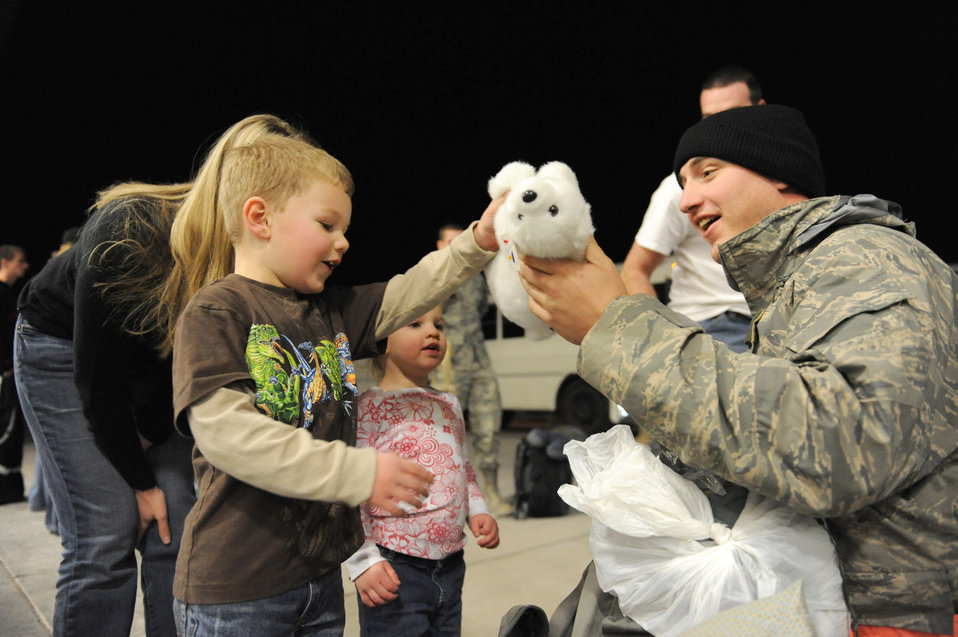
Home for the holidays

Technical Sgt. Justin Morrison presents a gift to his son, 4-year-old Micah Morrison, Dec. 6 at Nellis Air Force Base, Nev. Airmen with the 763rd Maintenance Squadron and 66th Rescue Squadron returned home after 3.5 months in Southwest Asia supporting the war on terrorism. Sergeant Morrison is the 763rd MXS Propulsions Flight assistant section chief.